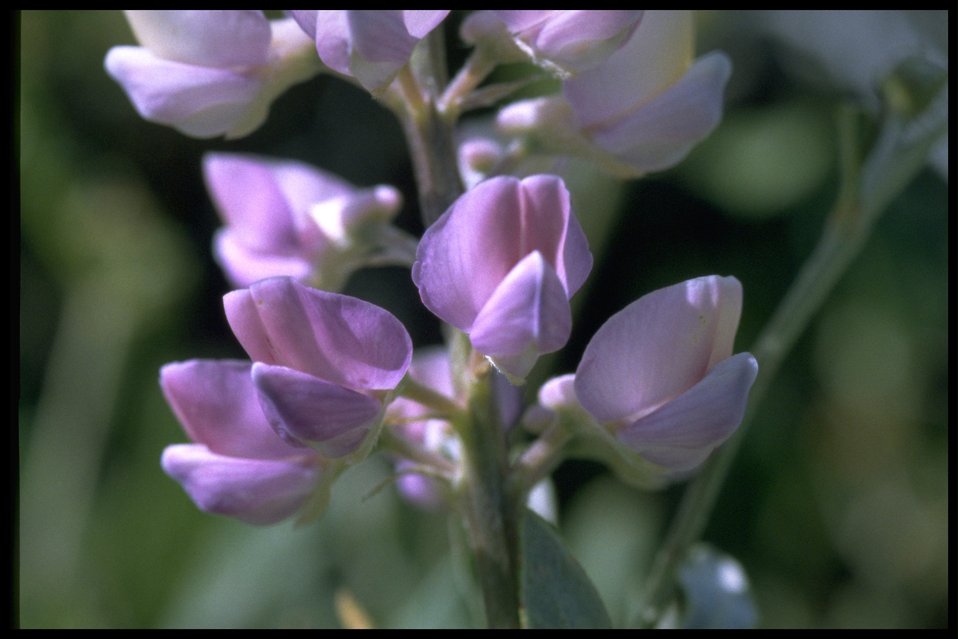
Closeup shot of Bigleaf Lupine wildflower.